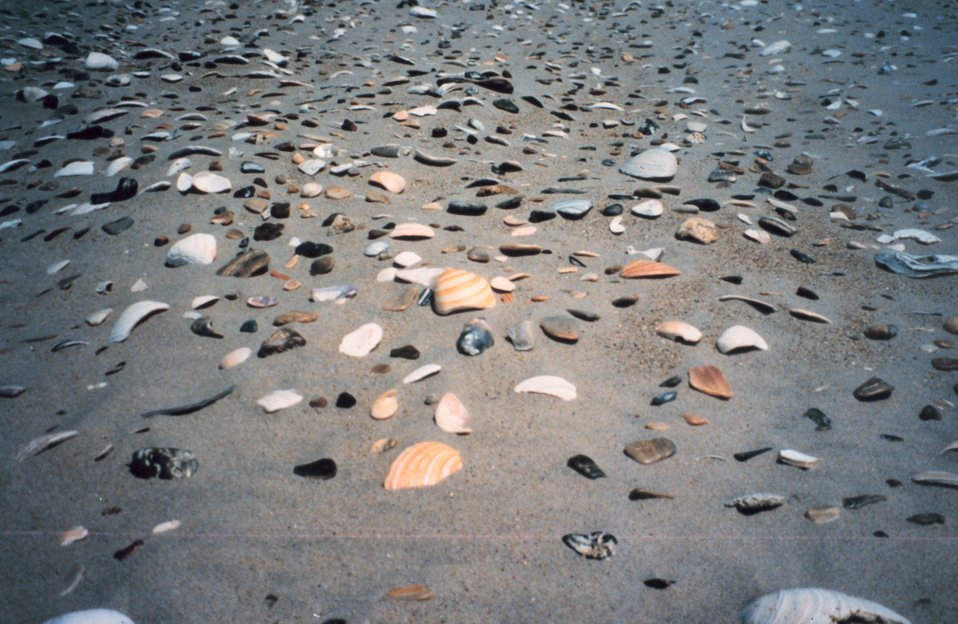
Low tide along South Carolina shoreline with sea shells